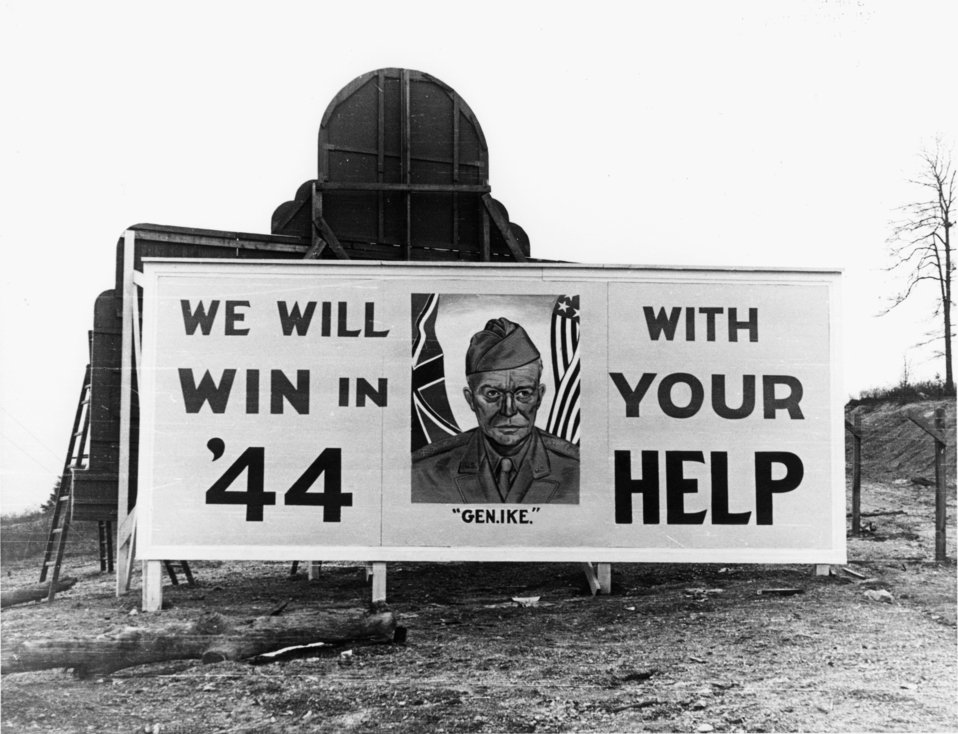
Billboard

ROLL172 DOE photo Ed Westcott

Oak Ridge Tennessee 1944